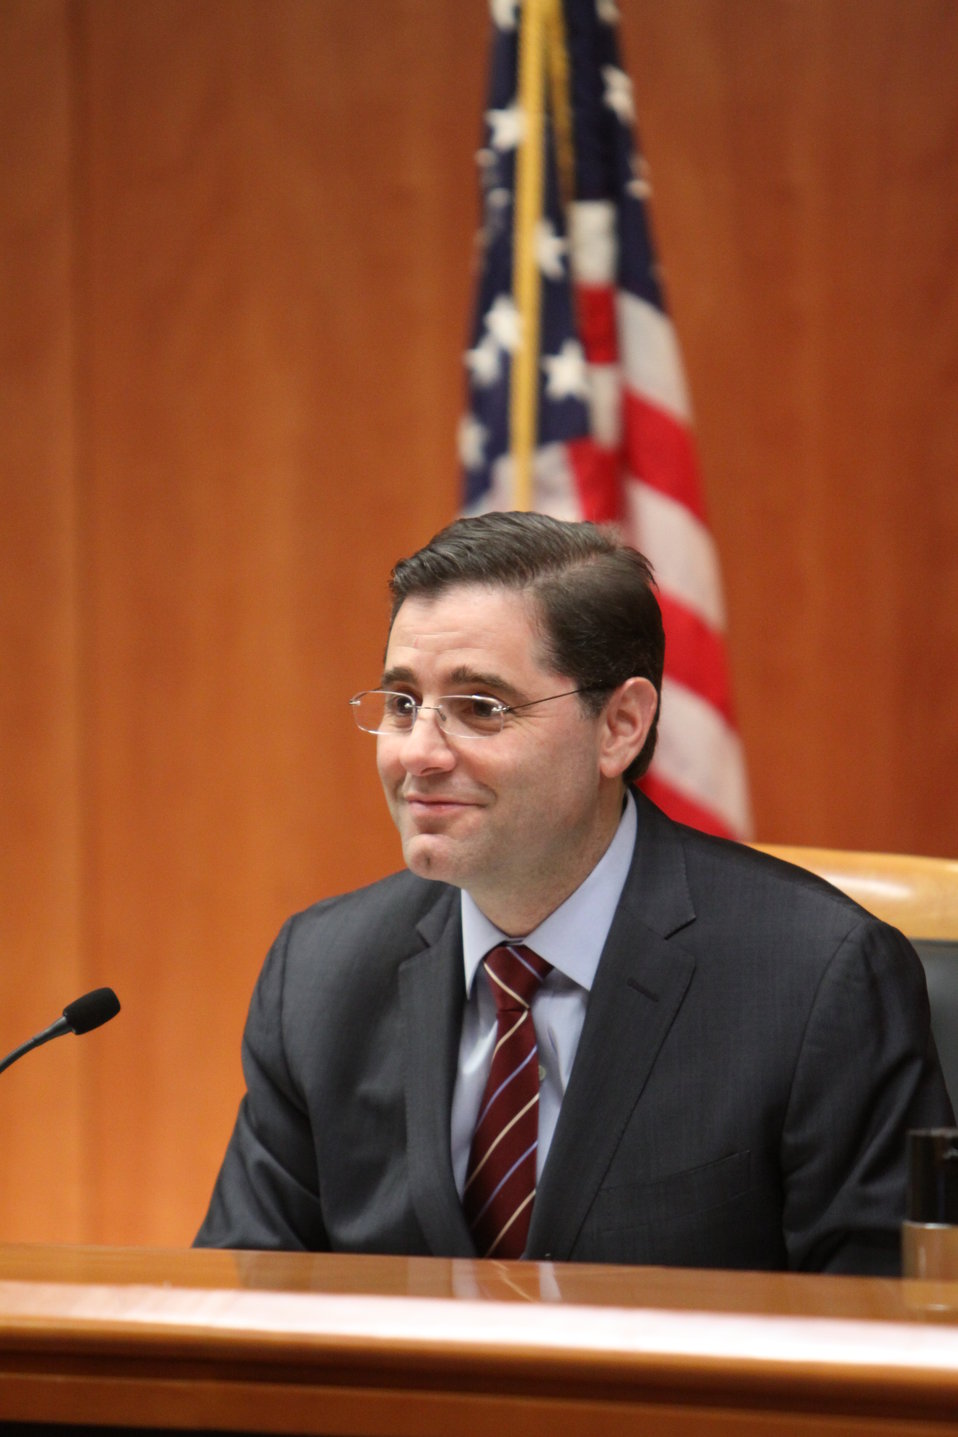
FCC Chairman Julius Genachowski